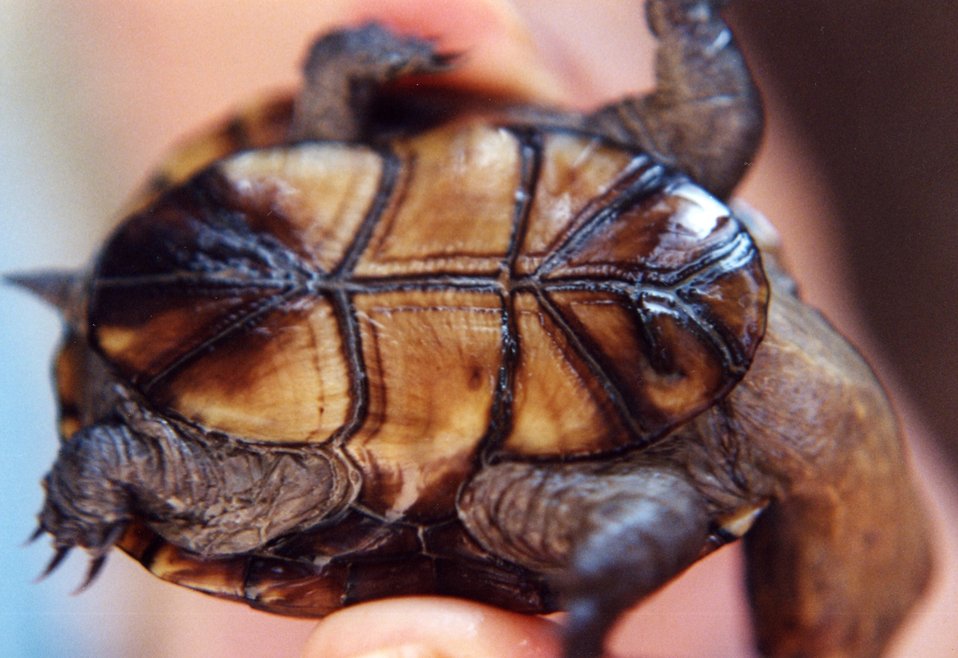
Juvenile mud turtle, bottom view.